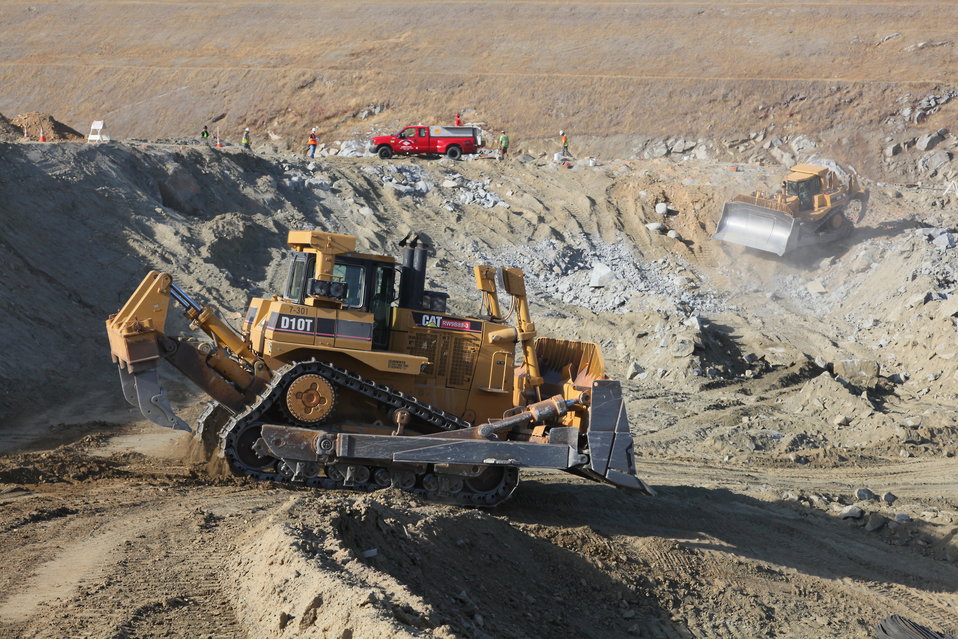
Excavating Folsom Dam’s auxiliary spillway

Excavation of the auxiliary spillway at Folsom Dam in Folsom, Calif., continues June 16, 2011. The spillway will let Folsom Dam release water sooner and more safely. The project is part of the Folsom Dam Joint Federal Project, a joint effort of the U.S. Army Corps of Engineers Sacramento District, the U.S. Bureau of Reclamation, the Central Valley Flood Protection Board and the Sacramento Area Flood Control Agency to improve the safety of the dam and reduce flood risk for the greater Sacramento area.